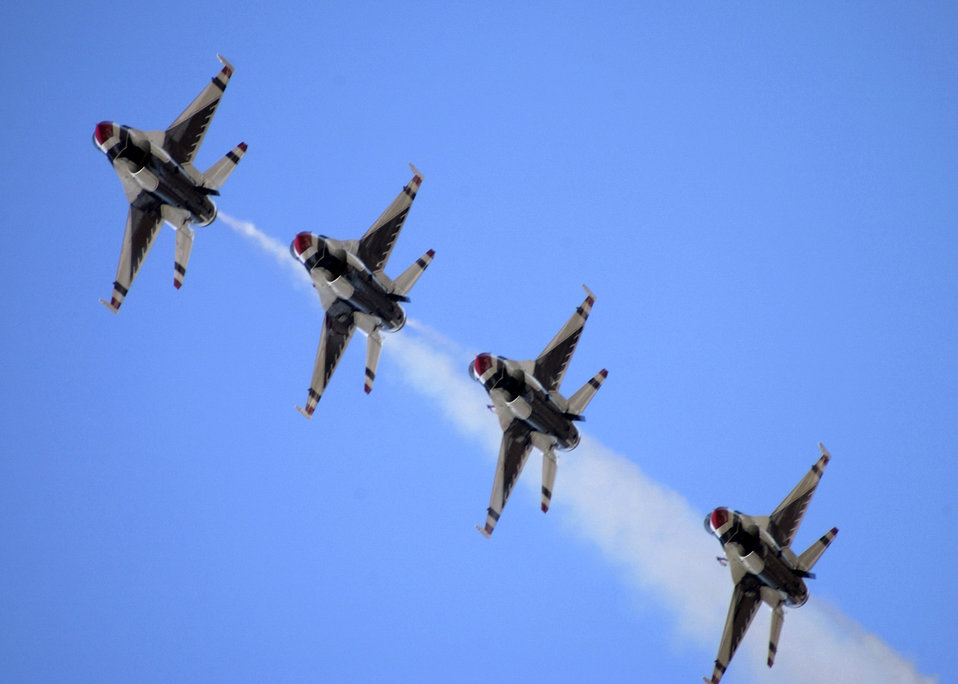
Thunderbirds

OVER DAVIS-MONTHAN AIR FORCE BASE, Ariz. -- The U.S. Air Force Thunderbirds flight demonstration team fly in trail formation during the 2005 Aerospace and Arizona days here April 2. The Thunderbirds are assigned to the U.S. Air Force Air Demonstration Squadron at Nellis Air Force Base, Nev.